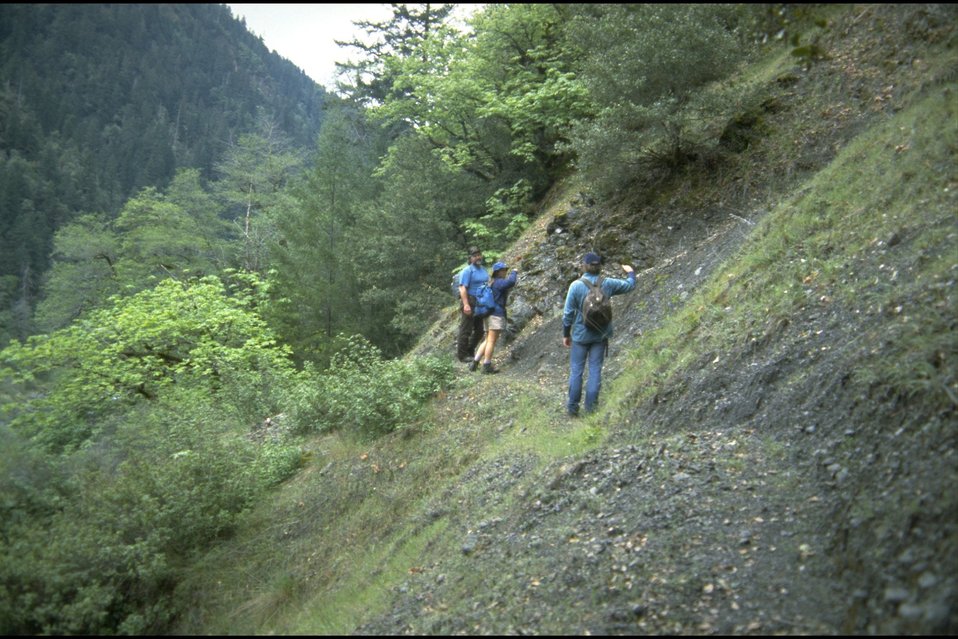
Rogue River Trail.